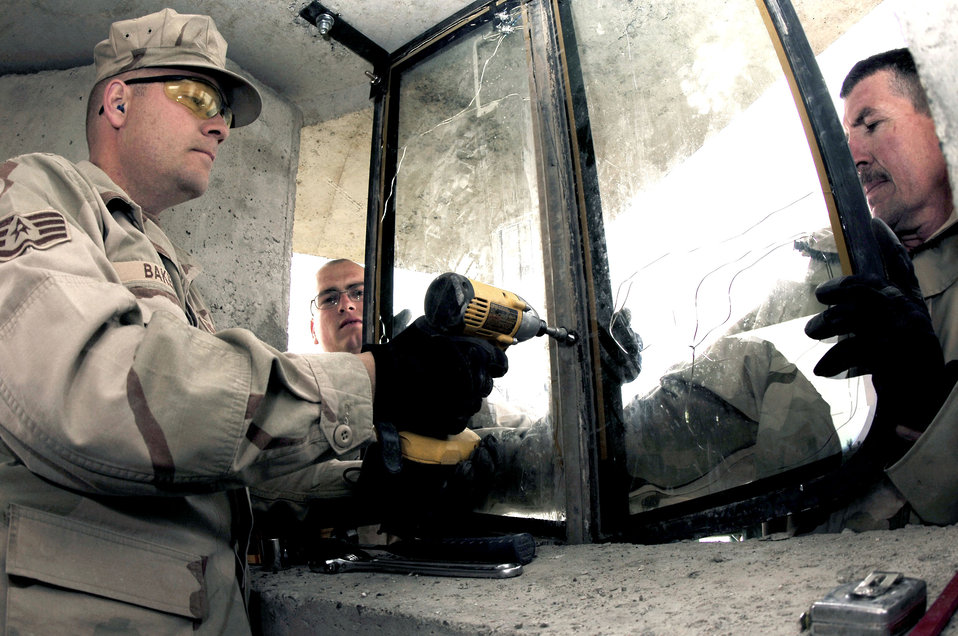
Old windshields new protection for Kirkuk tower guards

Staff Sgts. Alan Baker and Phillip Lavor and Tech. Sgt. Jonathon LeMaster hang a used Humvee windshield March 15 at Kirkuk Air Base, Iraq. The windshields are being re-used as added protection for the new security forces towers being built for the base perimeters. The Airmen are assigned to the 506th Expeditonary Civil Engineer Squadron structures team.